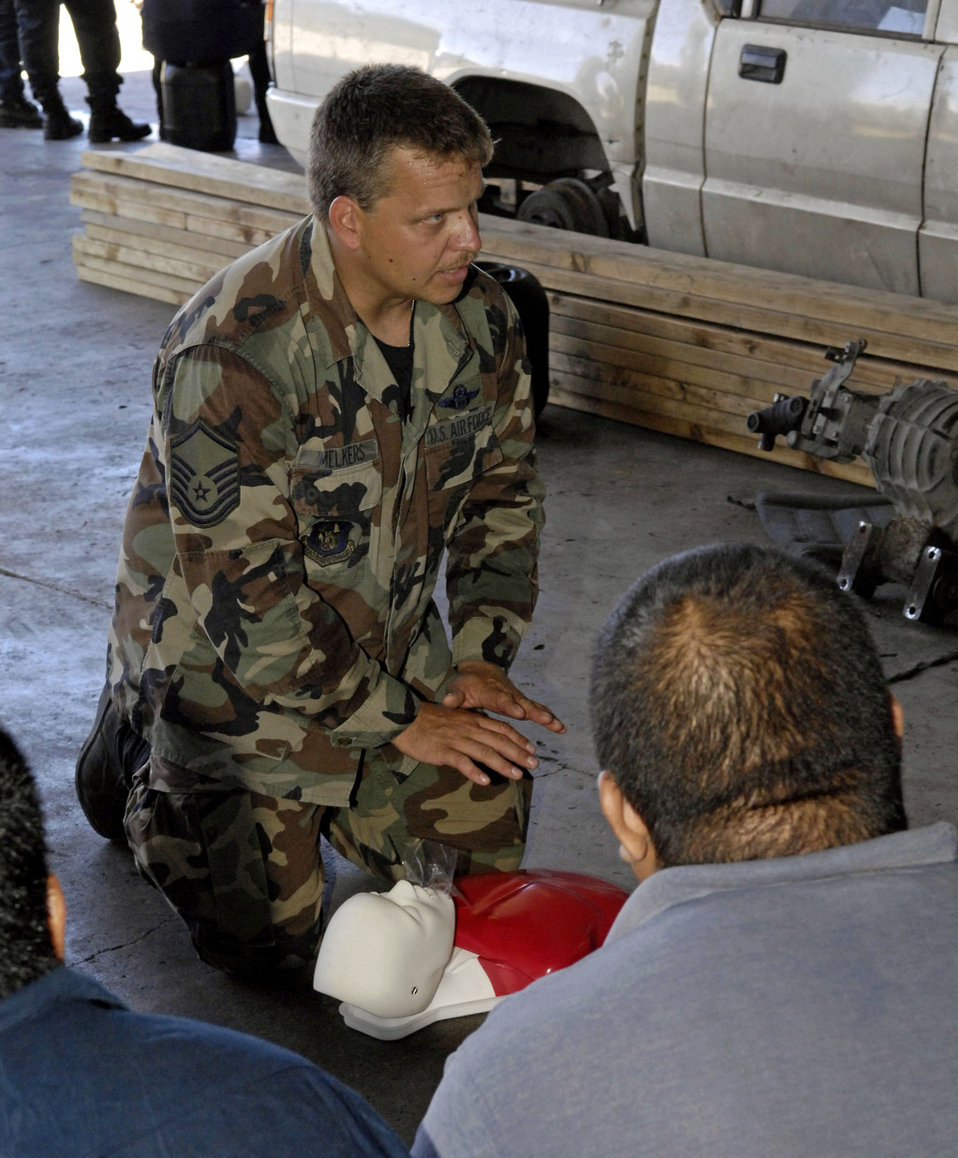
Reservist helps fellow firefighters in Nauru

Master Sgt. Paul Melkers teaches CPR to a group of firefighters July 25 at the Nauru Fire Station. Sergeant Melkers is a Reserve flight medic with the 446th Operations Group, and is part of a 12-person, joint-force U.S. Pacific Command team deployed to the Republic of Nauru in the South Pacific to provide training and assistance to the island's caregivers and first-responders.